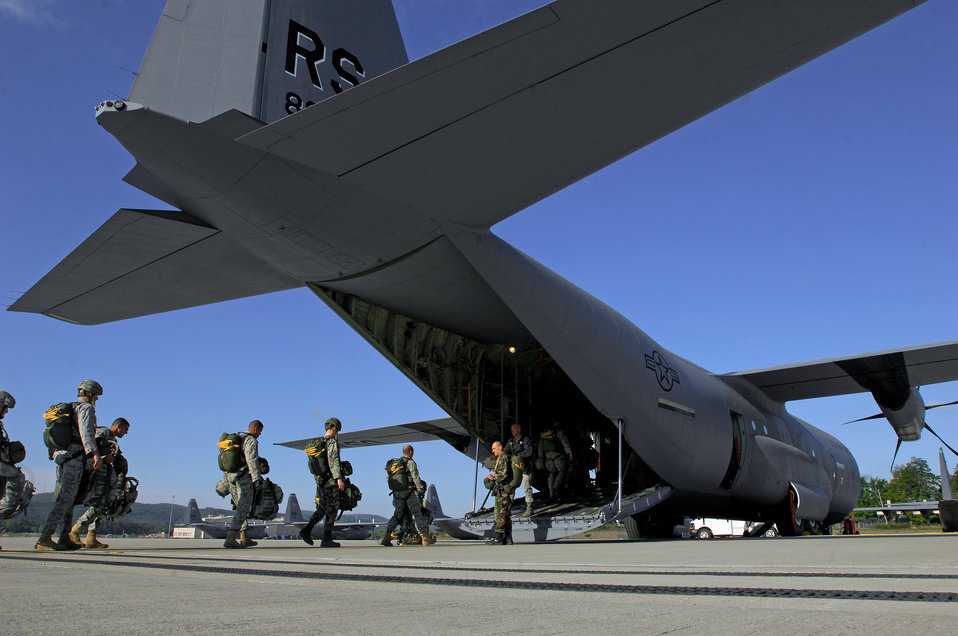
Airmen, Soldiers make first jump from Ramstein C-130J

Airmen and Army paratroopers load into a new C-130J Super Hercules for the first personnel drop from Ramstein Air Base, Germany.